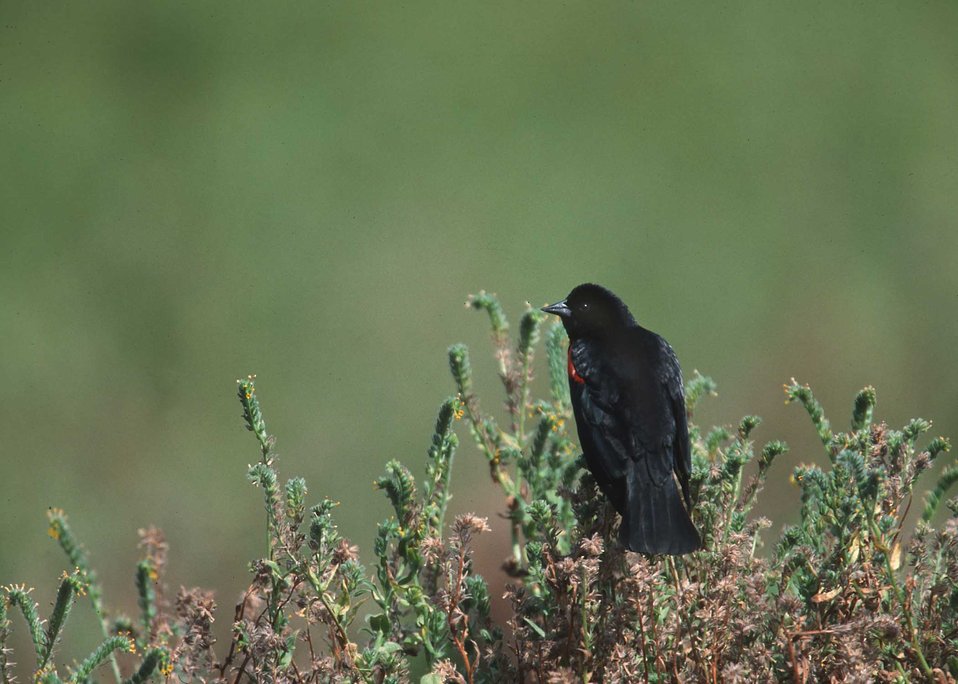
Tri-colored blackbird in yolo county.